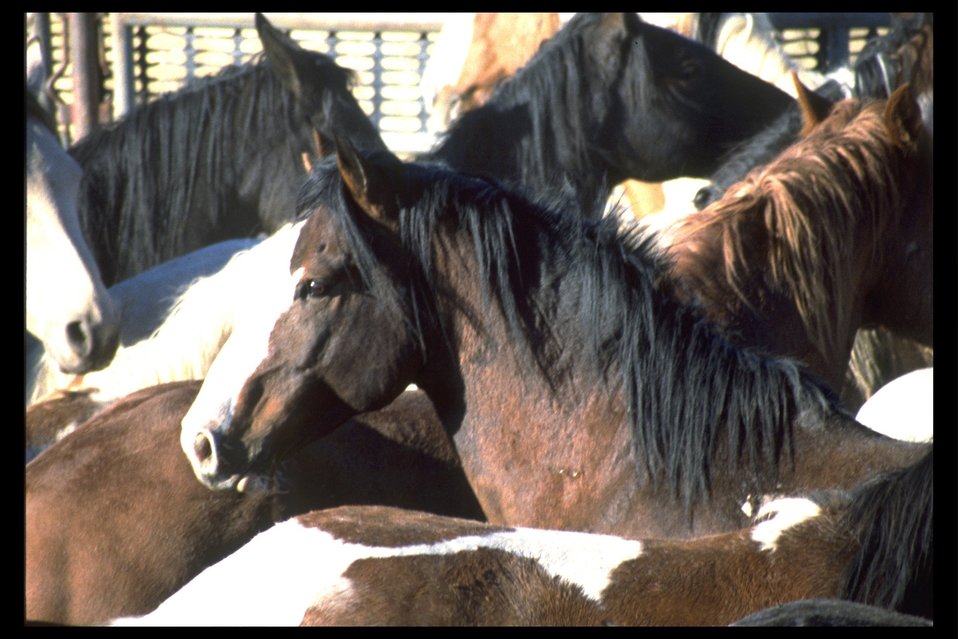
Undetermined.